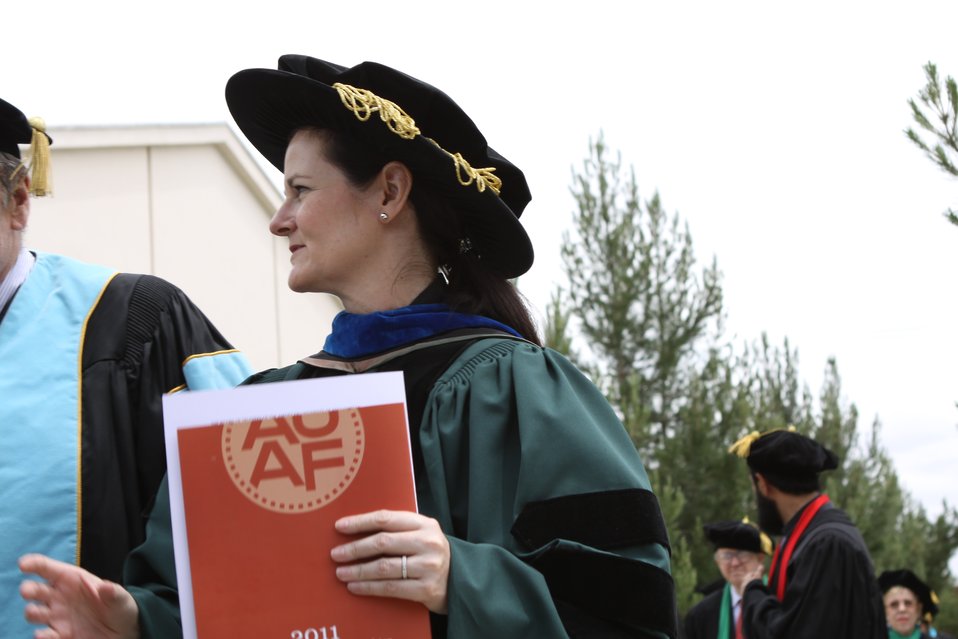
100526 AUAF Graduation 328